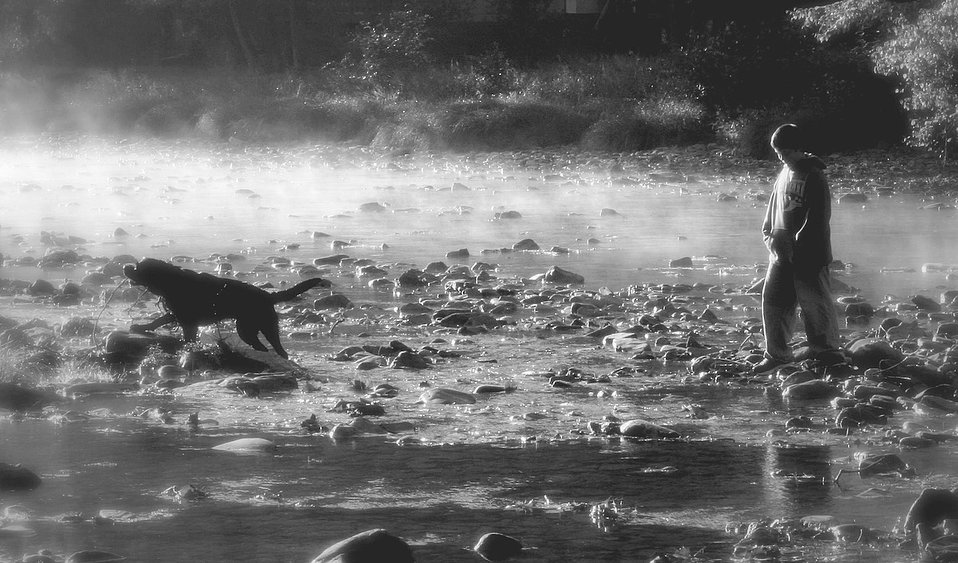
Uploaded by request of Teresa Pratt

Taken in Benezette, PA.

We were out there photographing the Wild Elk Herd. We took an early morning hike along a stream. The fog was just starting to lift when I took this picture. This is my son and our Labrador.